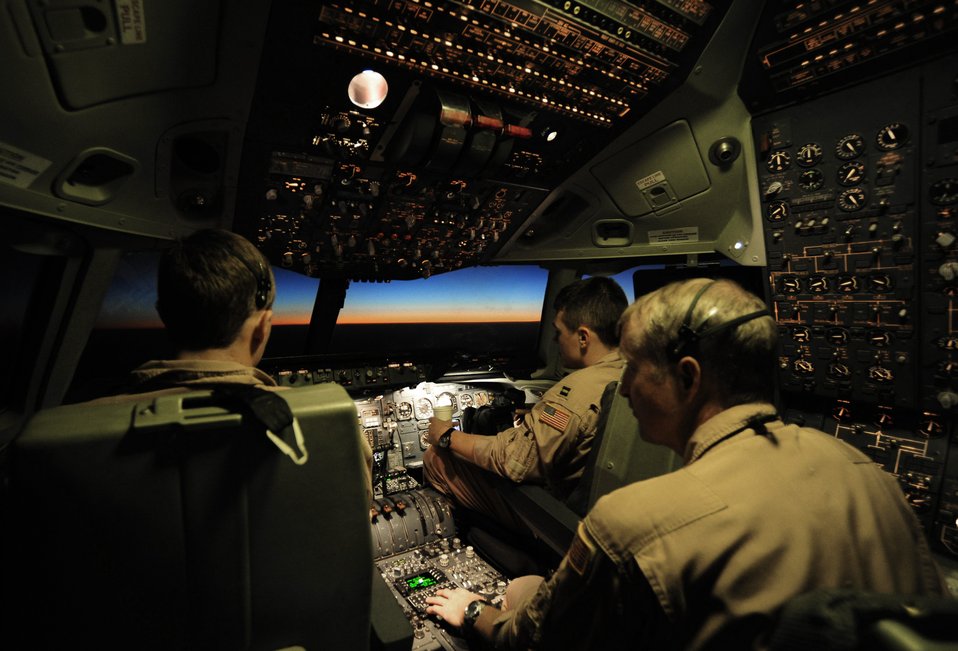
A hard day's work done

A KC-10 Extender crew assigned to the 908th Expeditionary Air Refueling Squadron discusses the flight while returning to the base after an aerial refueling mission in support of Operation Enduring Freedom Nov. 25, 2010.